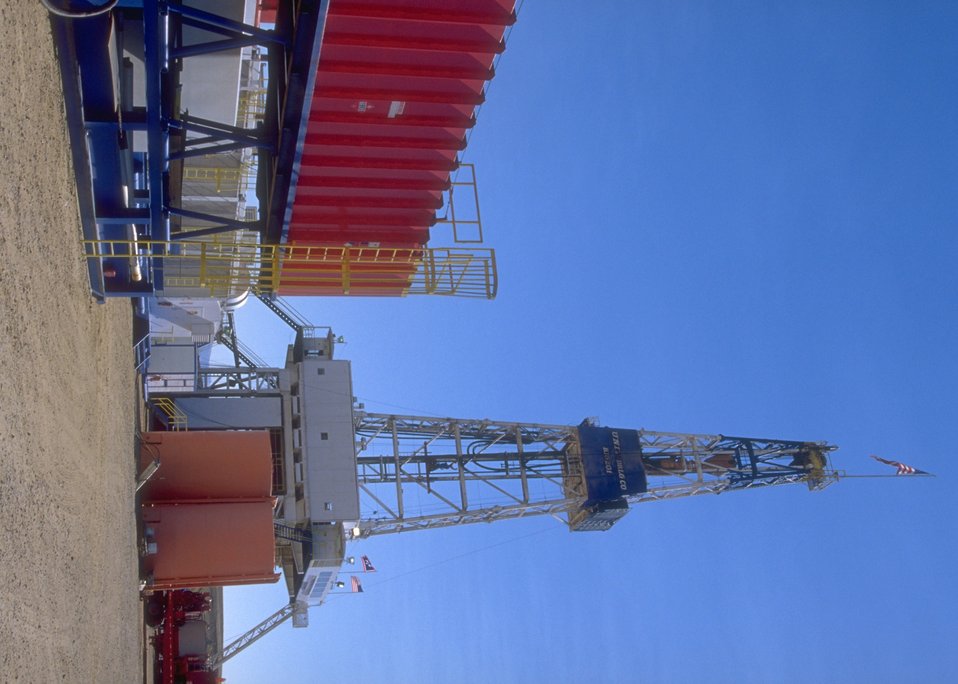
Burlington Northern deep well rig, Casper Field Office.